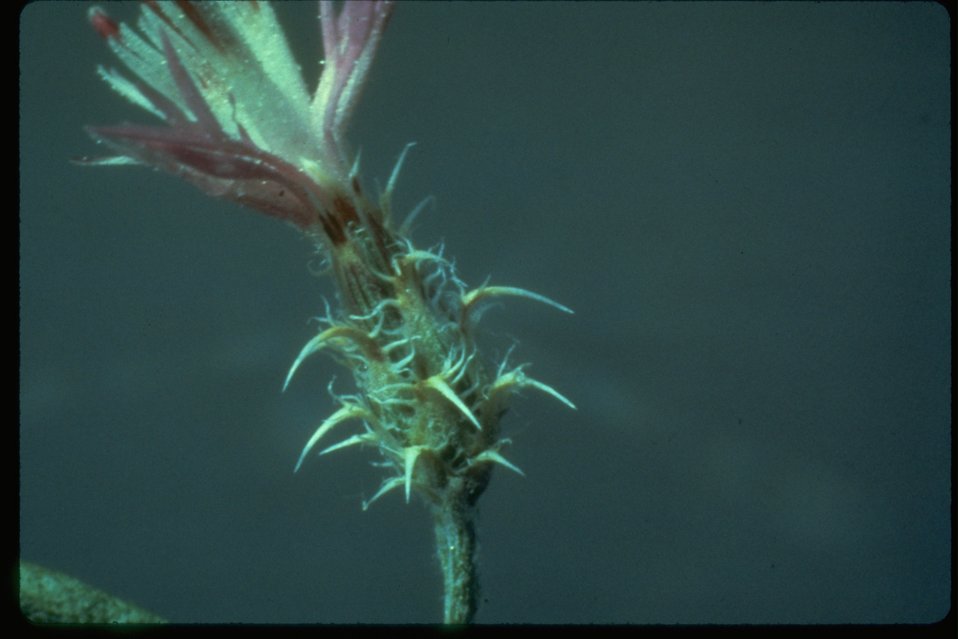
Seedhead of squarrose knapweed.